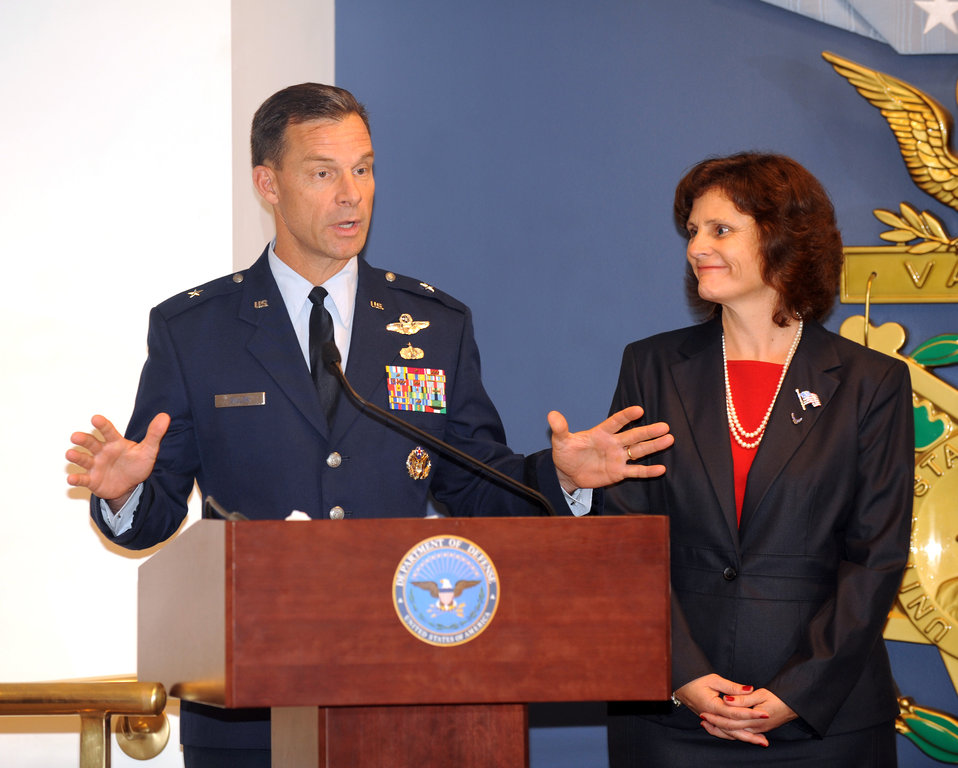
2011 Gen. and Mrs. Jerome F. O'Malley Award

Brig. Gen. Mark Dillon addresses the audience as his wife Sara looks on after the couple received the Gen. and Mrs. Jerome F. O’Malley Award at a Pentagon ceremony Oct. 11, 2011, in Washington, D.C. The Dillons received the award for their service at the 86th Airlift Wing at Ramstein Air Base, Germany, from Jan. 1 to Dec. 31, 2010, during which time the general served as wing commander.